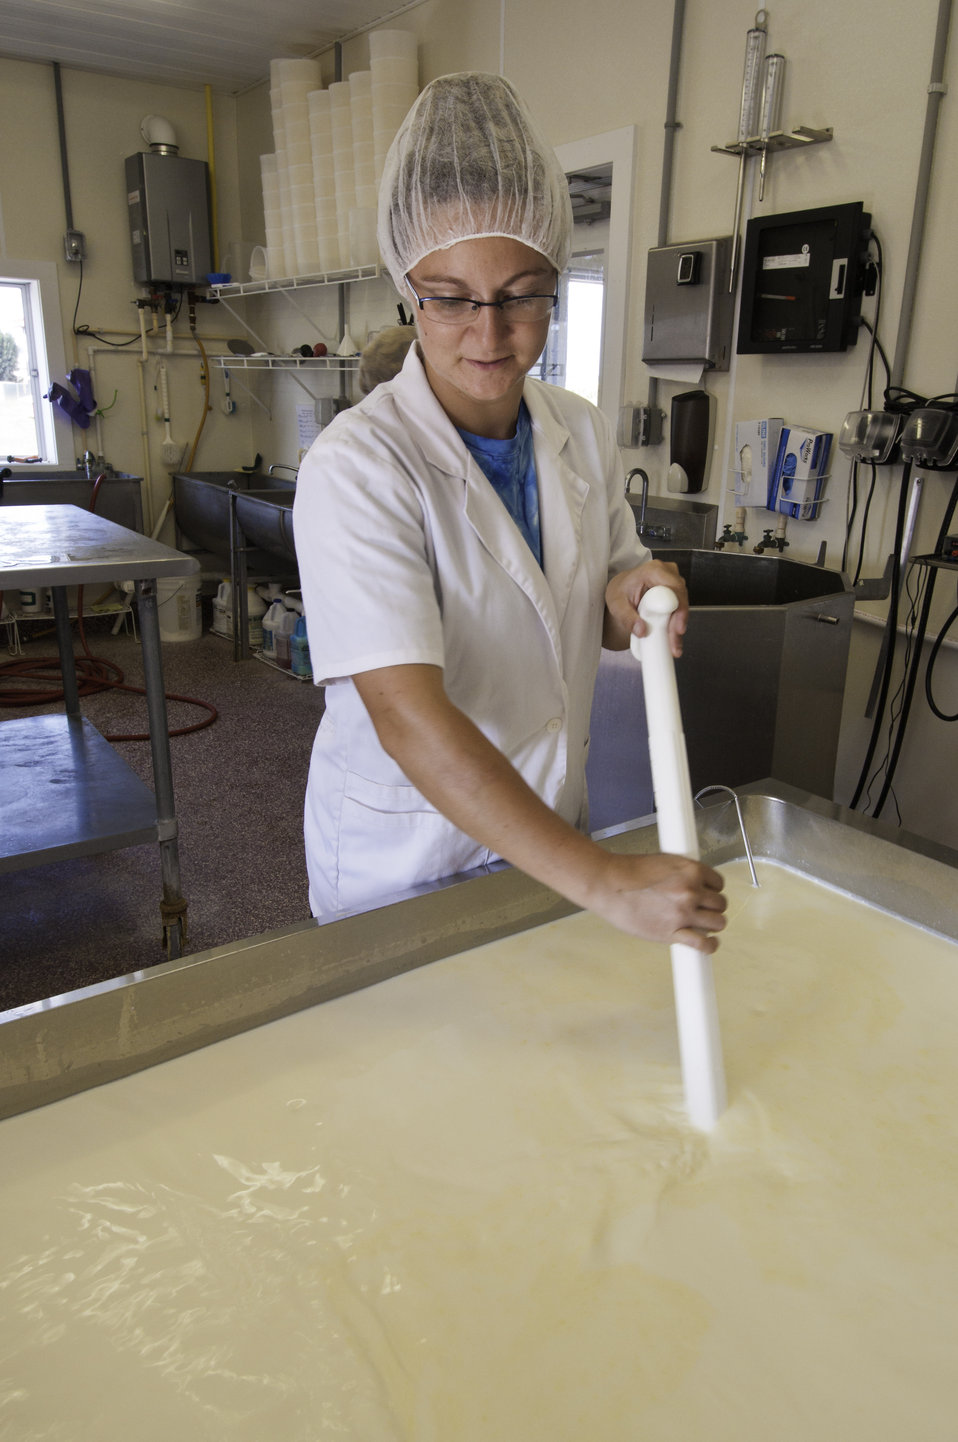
Chapel’s Country Creamery farm manager Courtney Biggs in Easton, MD stirs fresh raw milk used to produce artisanal cheeses at the dairy. The dairy uses fresh raw milk 12-24 hours old. After the milk is put in the cheese vat, the milk is constantly stirred as it is slowly heated to about 90º. The culture is then added which determines the kind of cheese to be made.